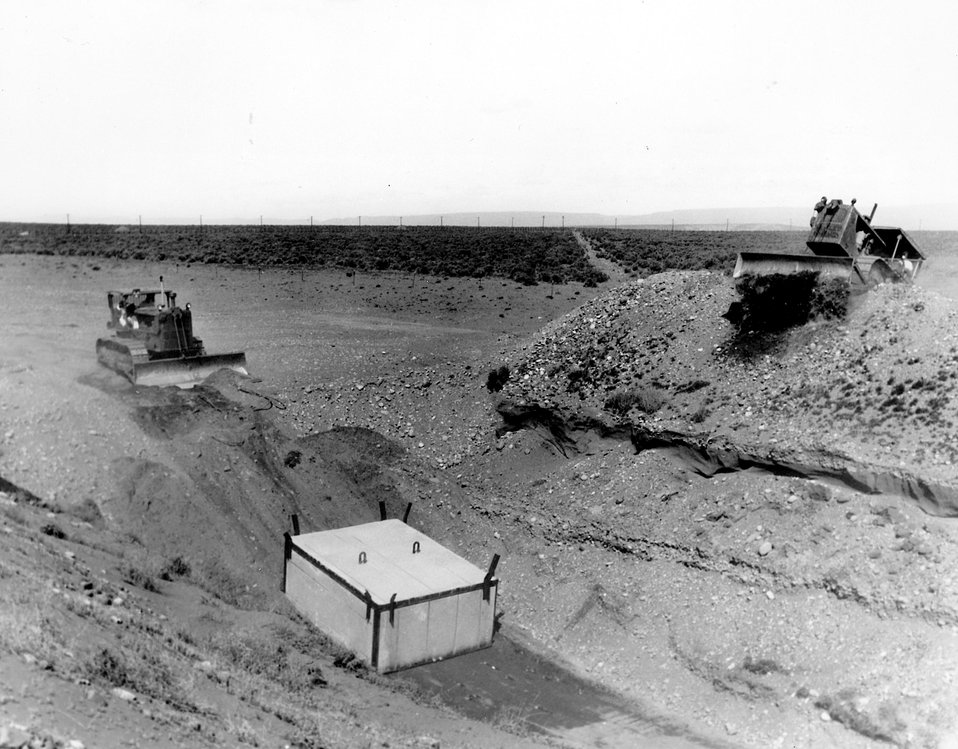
Concrete burial boxes weighing up to 30 tons are used to bury
highly radioactive process equipment which cannot be decontaminated to low level at the
Energy Research and Development Administration's Hanford Works.